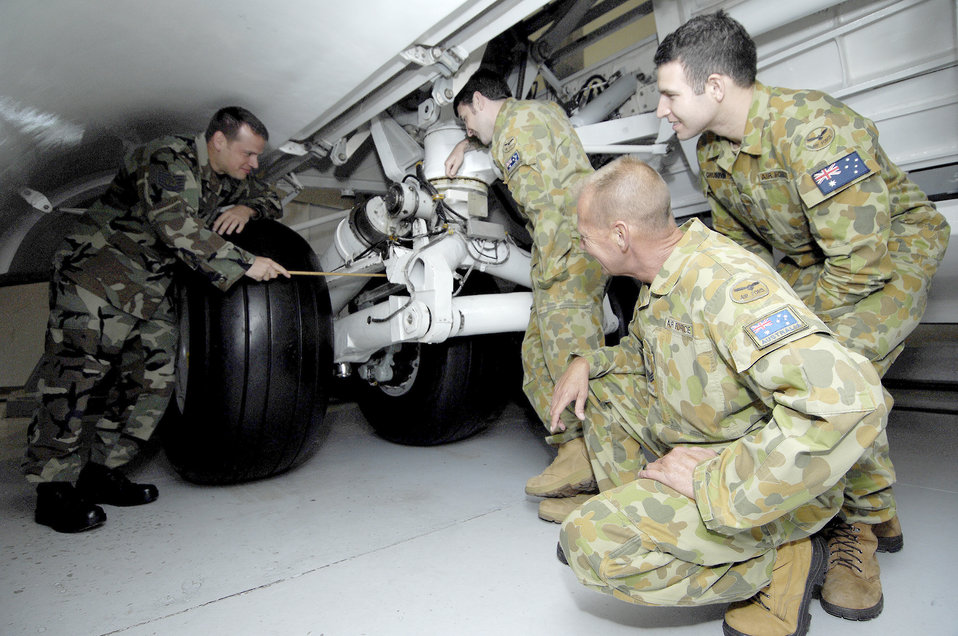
373 TRS readies international aircrew for flight

Tech. Sgt. Bryan Doughty instructs Royal Australian Air Force members during a three-month course on C-17 Globemaster III maintenance June 1, 2010, at Joint Base Charleston, S.C. Sergeant Doughty is a training instructor with the 373rd Training Squadron, Det. 5.